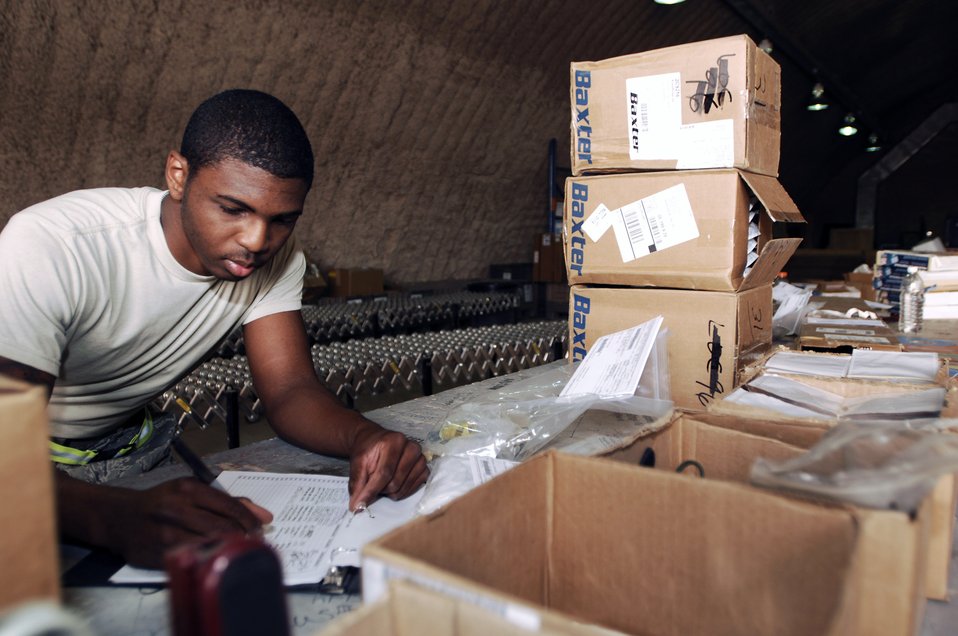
Joint Base Balad Airmen's initiatives shorten supply lines

Airman 1st Class Curtis McCord checks in aircraft parts and supplies Aug. 5 at Joint Base Balad, Iraq. The 332nd Expeditionary Logistics Readiness Squadron's Receiving Flight Service Center Airmen process approximately 350 aircraft parts a week, including broken parts and replacements, which they ship to recipients across the base. Airman McCord, a flight service center journeyman assigned to the 332nd ELRS, is deployed from Davis-Monthan Air Force Base, Ariz. His hometown is Troy, Ala.